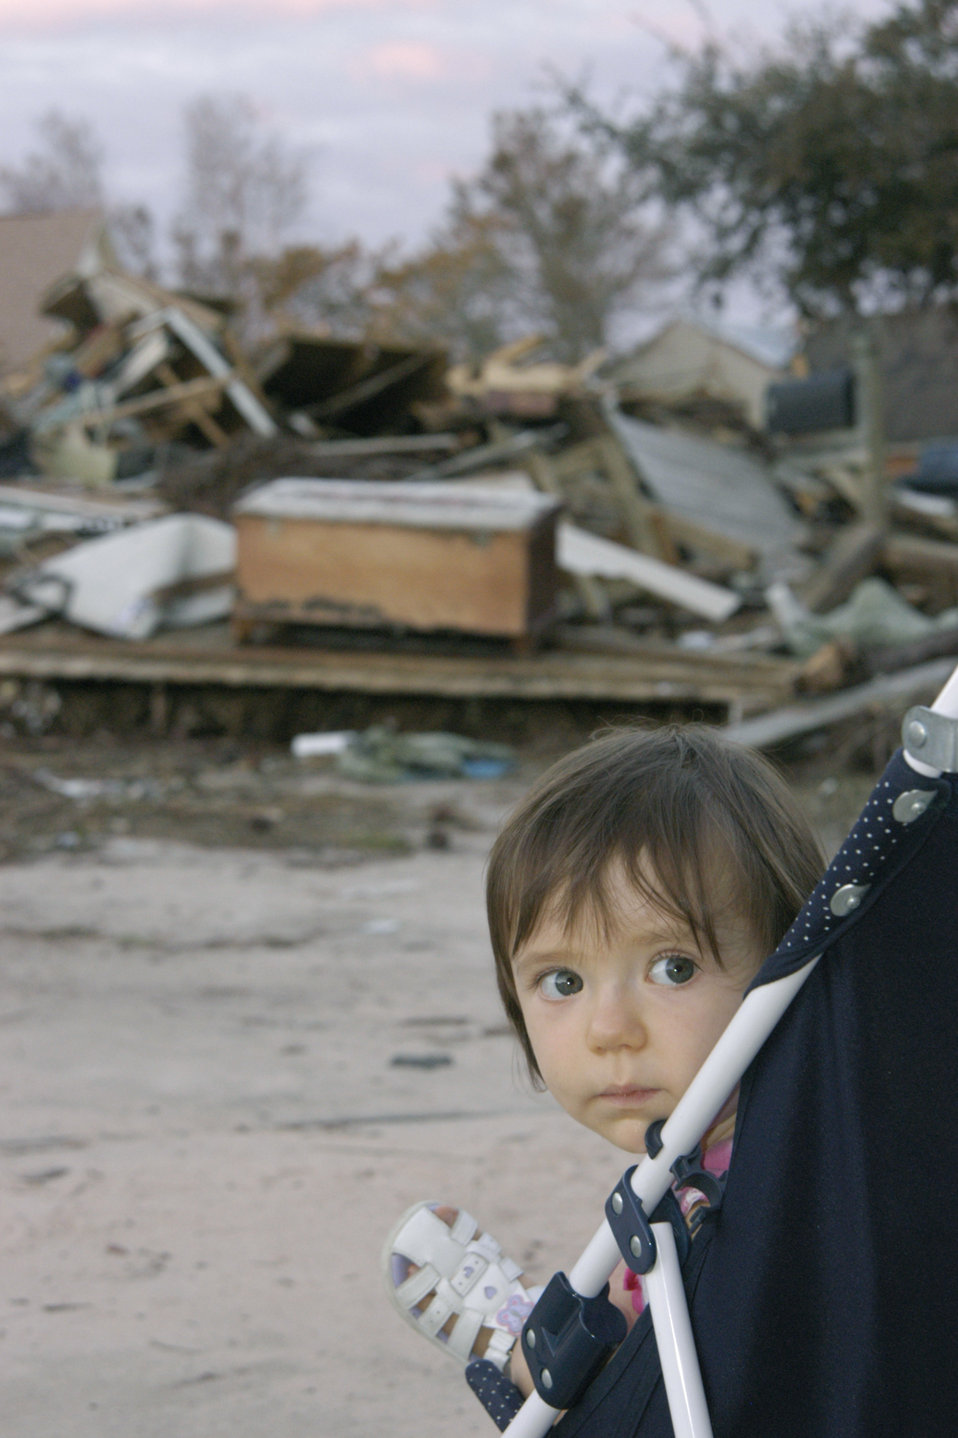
2005 hurricane season begins

FLORIDA -- Grace Mangold, 16 months old at the time, looks away from a pile of debris that once was the contents of her home. Maj. Charles Mangold visited the site with his daughter just a few days after Hurricane Ivan slammed into this coastal community near Hurlburt Field. His home received extensive hurricane damage. He is a 16th Special Operations Wing flight safety officer at Hurlburt Field.